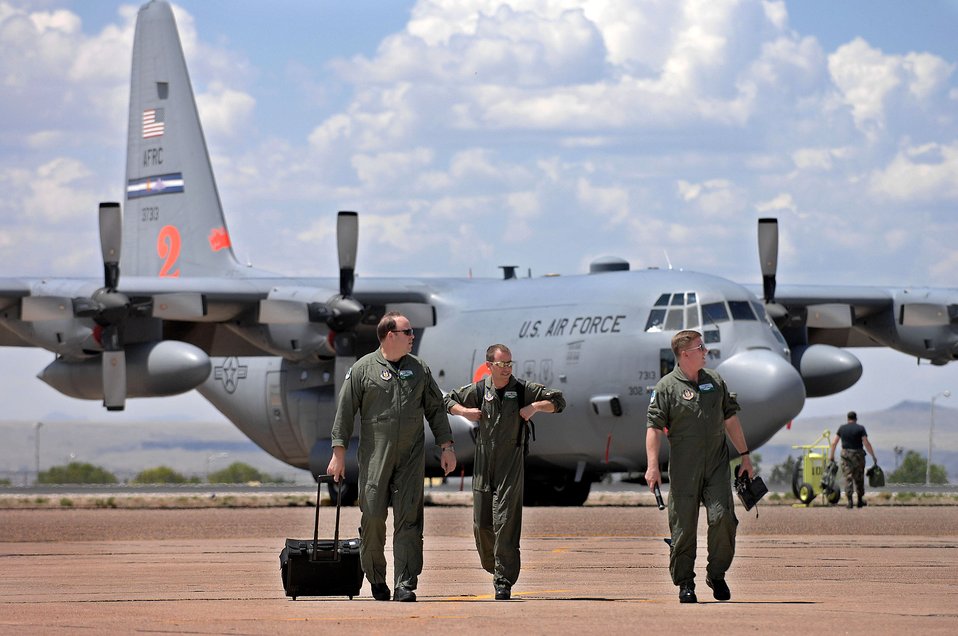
Air Force aerial firefighters train in New Mexico

From left, Master Sgt. Tim McWilliams, Senior Master Sgt. Jim Rucker and Senior Master Sgt. Dave Carey finish a day of training April 30 at the Albuquerque Air Tanker Base in New Mexico. C-130 Hercules aircrews from the Air Force Reserve Command and Air National Guard units began arriving April 30 for the first day of Modular Airborne Fire Fighting System training at the U.S. Forest Service's in Albuquerque. The sergeants are flight engineers from the 731st Airlift Squadron at Peterson Air Force Base, Colo.